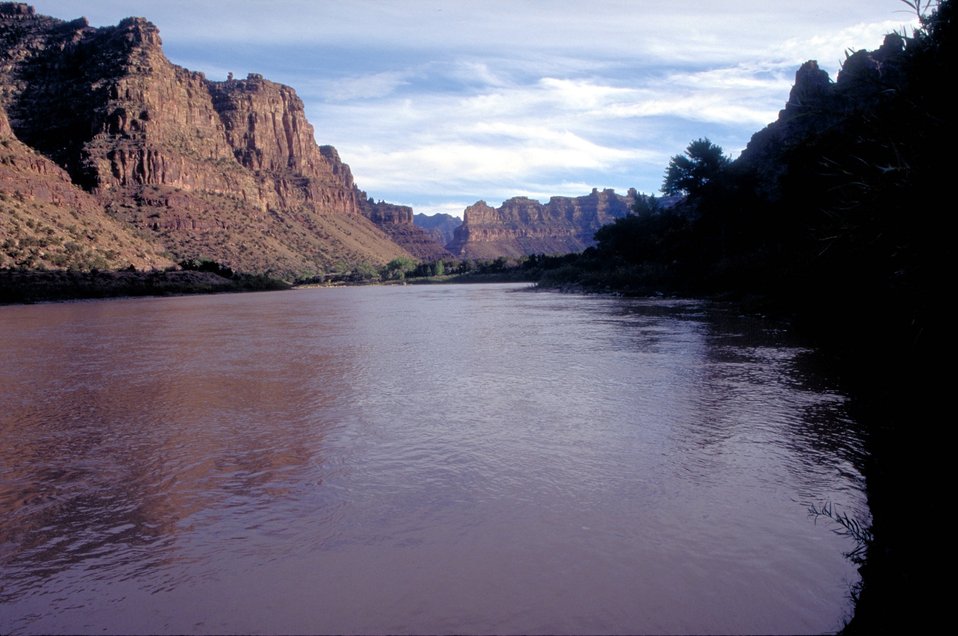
Desolation/Gray Canyons near Price, Utah.